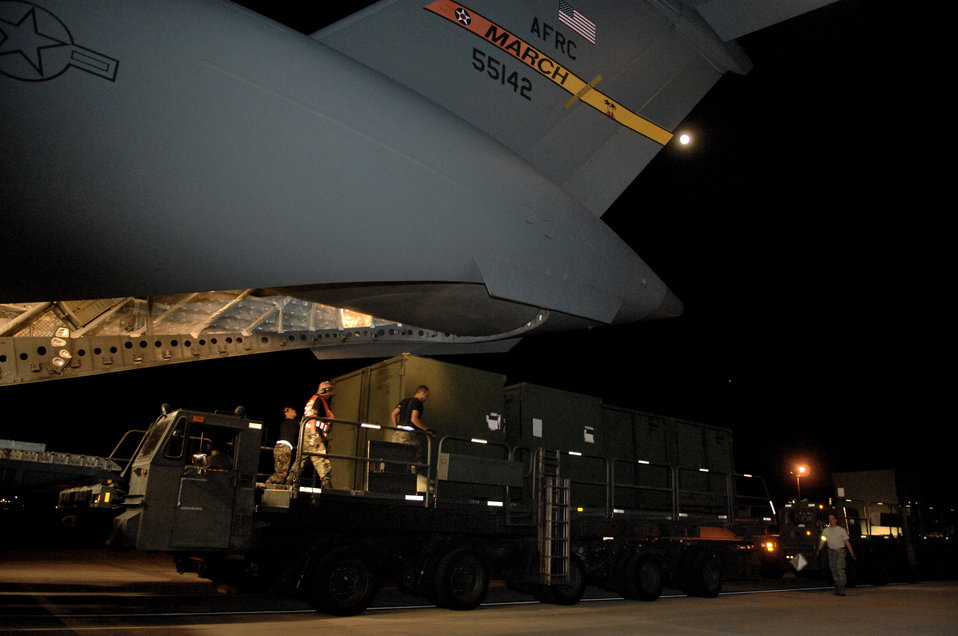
Wildfire support

Members of the 452nd Air Mobility Wing assist U.S. Army North members from Fort Sam Houston in San Antonio unload emergency response equipment from an C-17 Globemaster III Oct. 24 at March Air Reserve Base, Calif. The Soldiers are assisting with the Southern California wildfires.